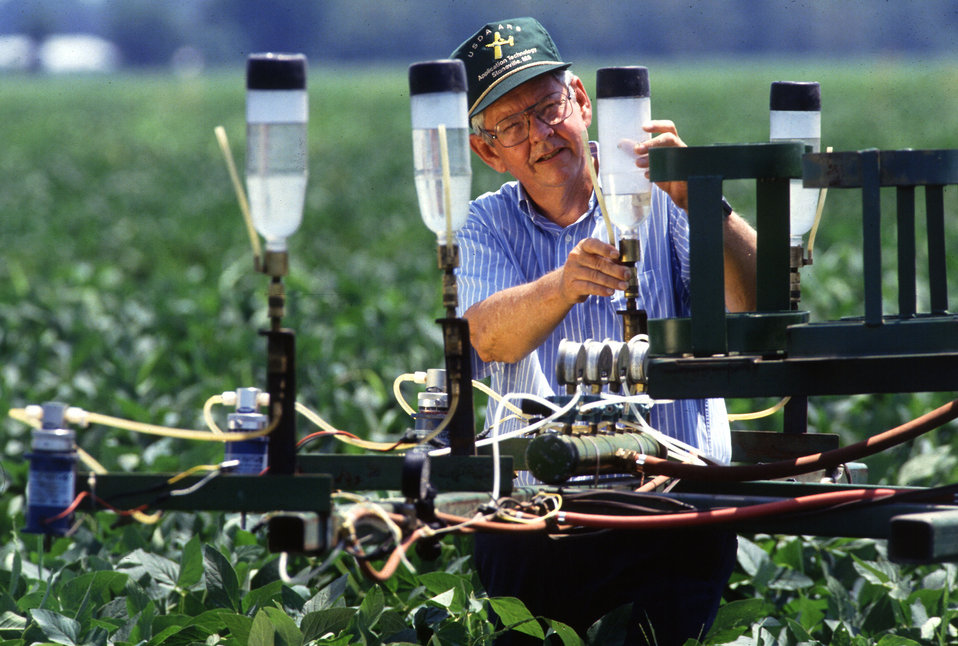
Ultra-low volume herbicide application methods developed by U.S. Department of Agriculture (USDA) Agricultural Research Service (ARS) plant physiologist Chester McWhorter and colleagues could significantly reduce the use of agricultural chemicals.